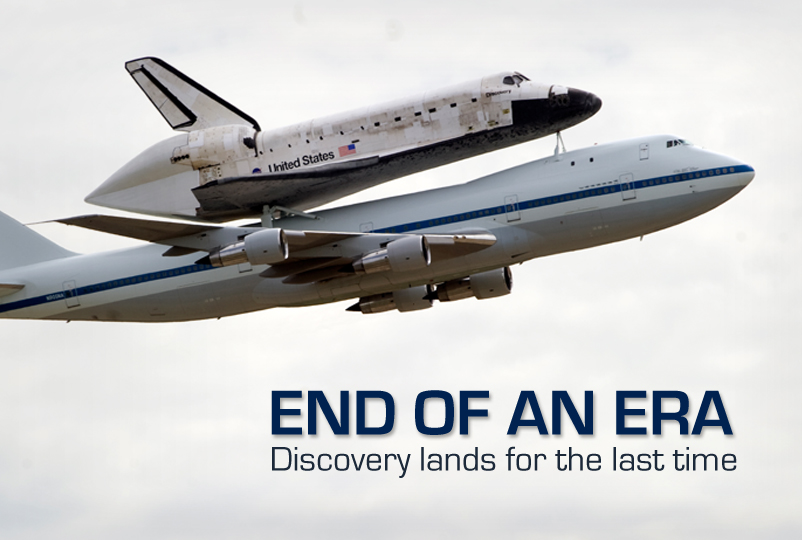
End of an era